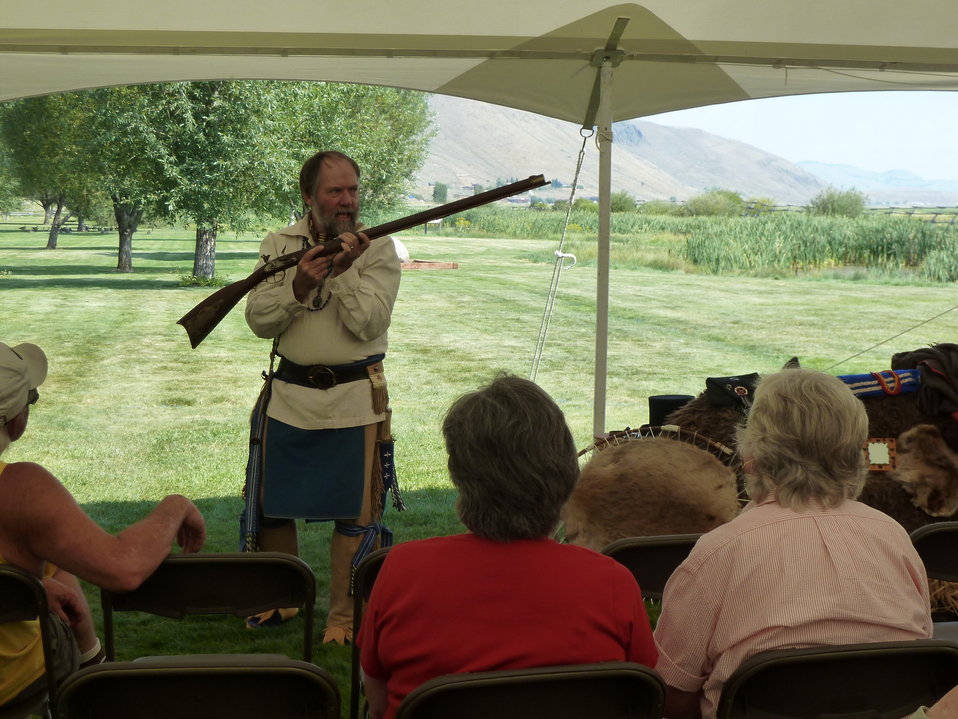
A Glimpse of an Earlier Profession

Grand Teton Naturalist Andrew Langford gave a presentation during the National Elk Refuge's centennial weekend to give the public insight into the legendary mountain men who lived and trapped in Jackson Hole during the 1820s and 1830s. Dressed in appropriate attire, Langford demonstrated many of the specialized skills that were required of these brave and industrious individuals.

Credit: USFWS / Betty Mulcahy, National Elk Refuge volunteer